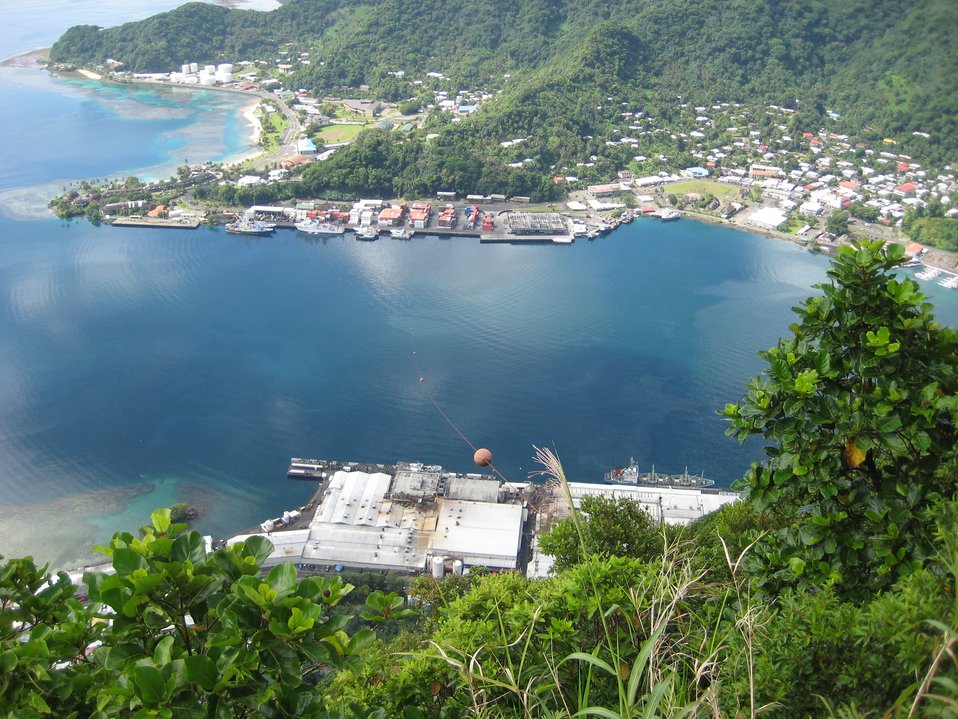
Pago Pago Harbor